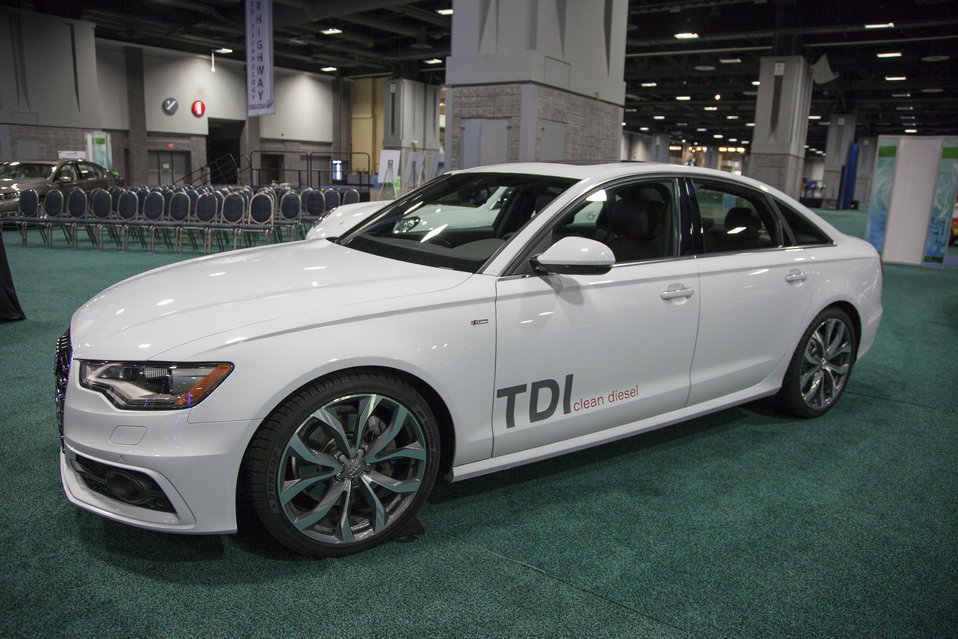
An increasing number of automakers are releasing light duty clean diesel vehicles that have excellent fuel economy, especially for highway driving. In the late 1990s, the Energy Department supported research projects that reduced the emissions of diesel engines and helped bring them to American roads.